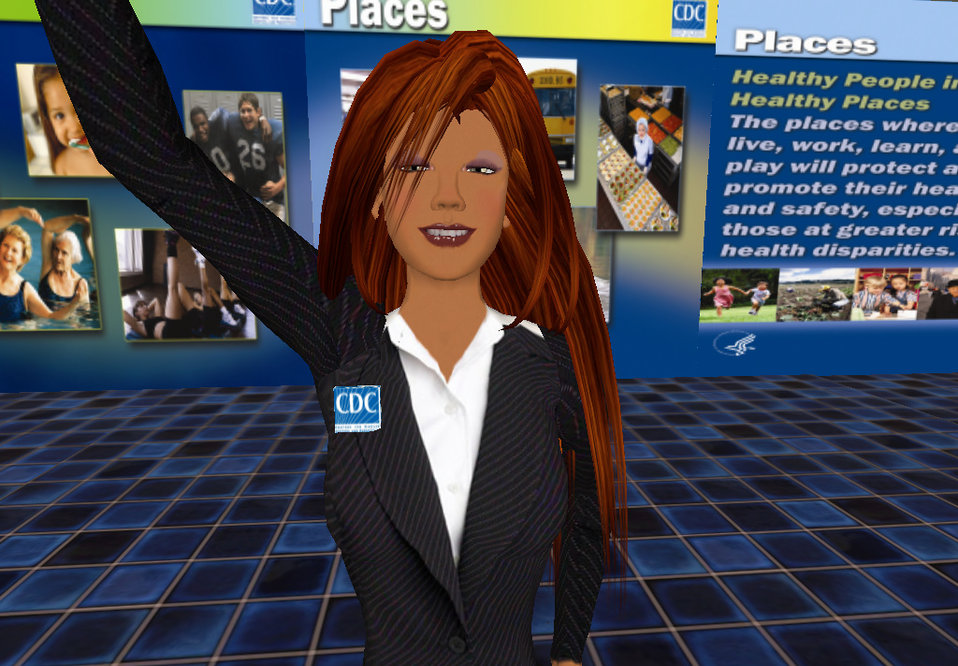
This computer-generated image depicts Hygeia Philo, the CDC's lead avatar in the virtual world of Second Life. This image was taken in preparation for the 'Virtual Worlds 2007', Spring Conference, where, Ms. Philo's creator, Dr. John Anderton, explained the CDC's interest in virtual world development. Designed to be the modern muse of health, Hygeia serves as lead health spokesperson, and health educator in this new virtual space. See PHIL 10002, 10005, 10007, 10008, 10009, 10011, 10012, 10013, 10015, and 10016 for additional images of Ms. Philo.